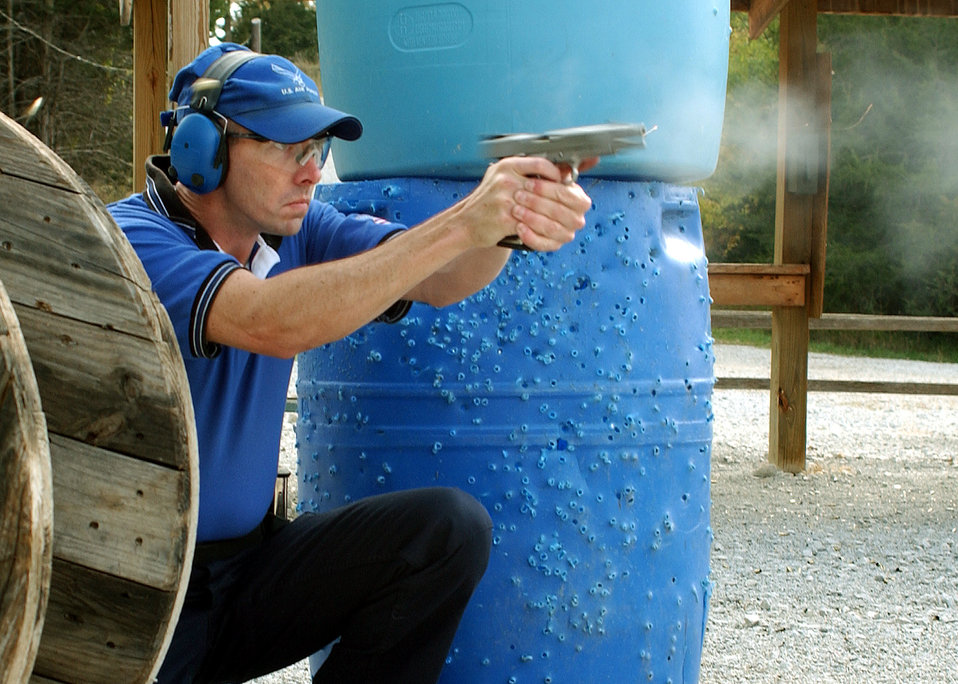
Airman sets sights on shooting championship

LEWISVILLE, Neb. -- Maj. Roger Sherman takes aim at his target through obstacles set up at the Eastern Nebraska Gun Club here. He creates drills to prepare himself for a practical pistol competition. Major Sherman is a two-time national military champion at the U.S. Practical Shooters Association Handgun Nationals. He is assigned to U.S. Strategic Command's global operations directorate at Offutt Air Force Base, Neb.